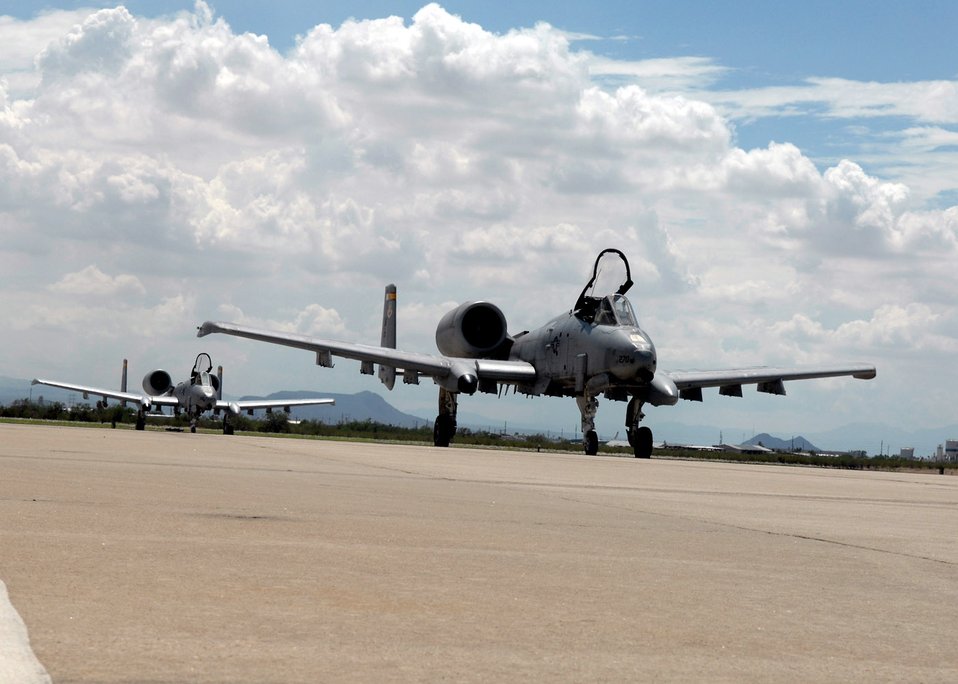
First class qualification

Second Lieutenant Aaron Cavazos taxis an A-10 Thunderbolt II after completing the first A-10C pilot initial qualification course Aug. 2 at Davis-Monthan Air Force Base, Ariz. During the seven-month-long qualification course, the training focused on the new A-10C platform which replaced the A-10A. The pilots also learned the basics of being attack pilot wingmen, which included flying in formation to provide mutual support, communicate with radios and kill the assigned target on the first attempt. Lieutenant Cavazos is assigned to the 357th Fighter Squadron.